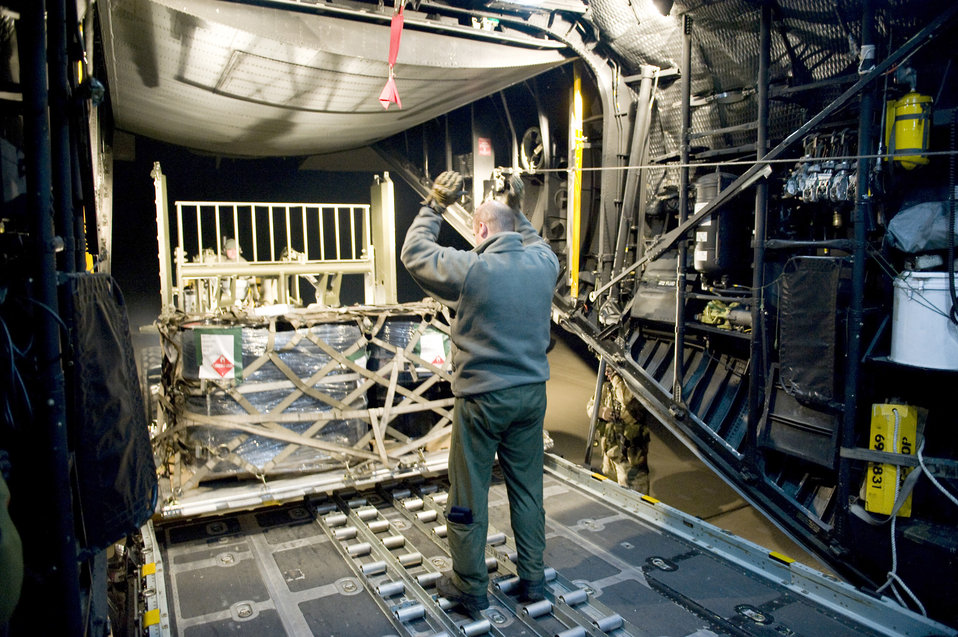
Delivering supplies

Members of the 353rd Special Operations Group off-load a pallet of fuel March 16, 2011, at Sendai Airport, Japan. The 353rd Special Operations Group is establishing a usable runway at Sendai Airport to help with Japan's earthquake and tsunami relief.